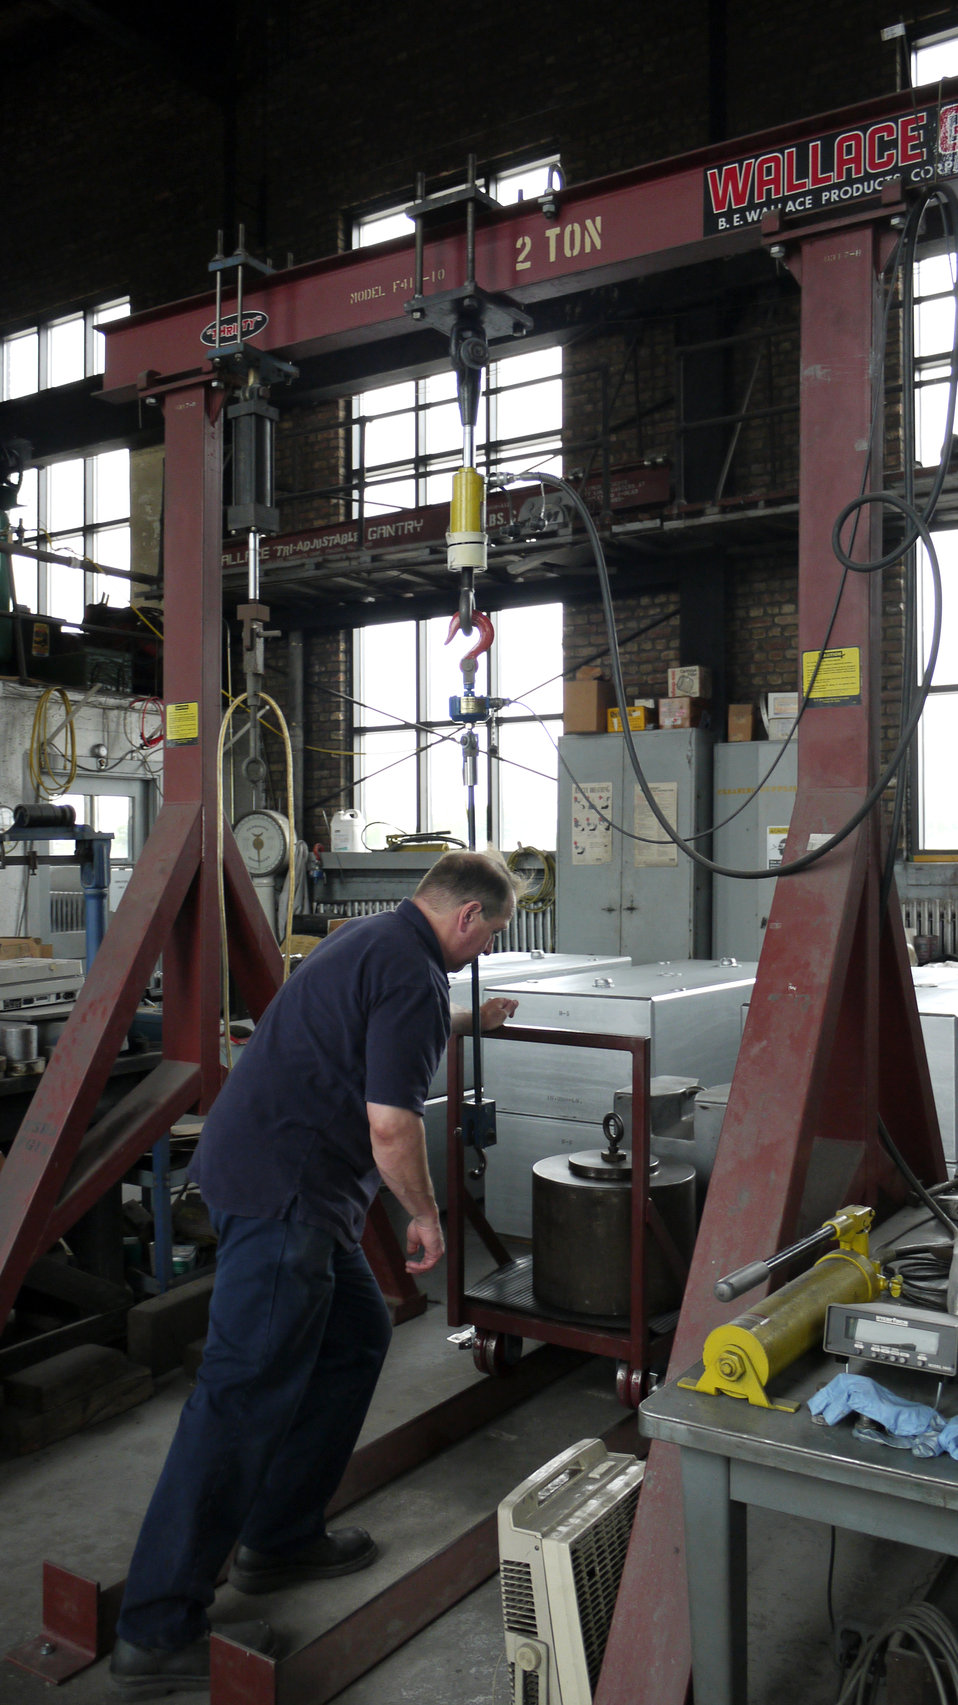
U.S. Department of Agriculture’s (USDA) Grain Inspection, Packers, and Stockyard Administration (GIPSA) industrial specialist Marcus Harwitz calibrates 1000 lb. test weights using USDA GIPSA load cell comparator at USDA GIPSA Master Scale Depot in Chicago, IL on Jul 2, 2013. USDA GIPSA entered into an agreement with the National Institute of Standards and Technology (NIST) and the Association of American Railroads (AAR) in 1980 transferring responsibility to USDA’s GIPSA to maintain the Master Scale facility in Chicago, IL and calibrate all the master scales in the continental U.S. annually.